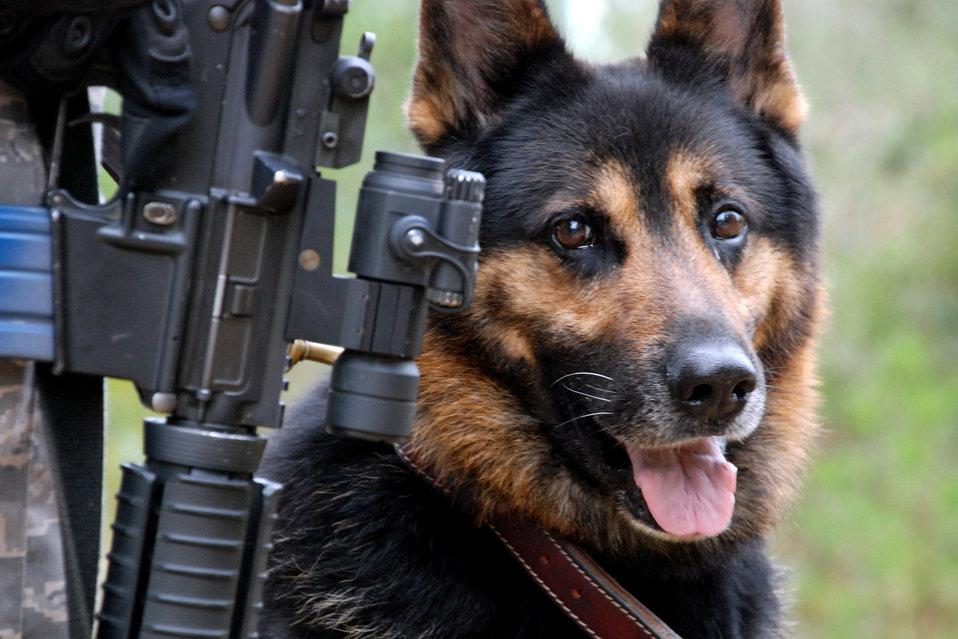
Brave Defender training goes to dogs

Rexo waits for his handler Senior Airman John Spearing to get instructions before participating in a Brave Defender training scenario Oct. 23 at Eglin Air Force Base, Fla. The two-week course has now added a military working dog tract to the cirriculum. Airman Spearing is with the 78th Security Forces Squadron at Robins AFB, Ga.